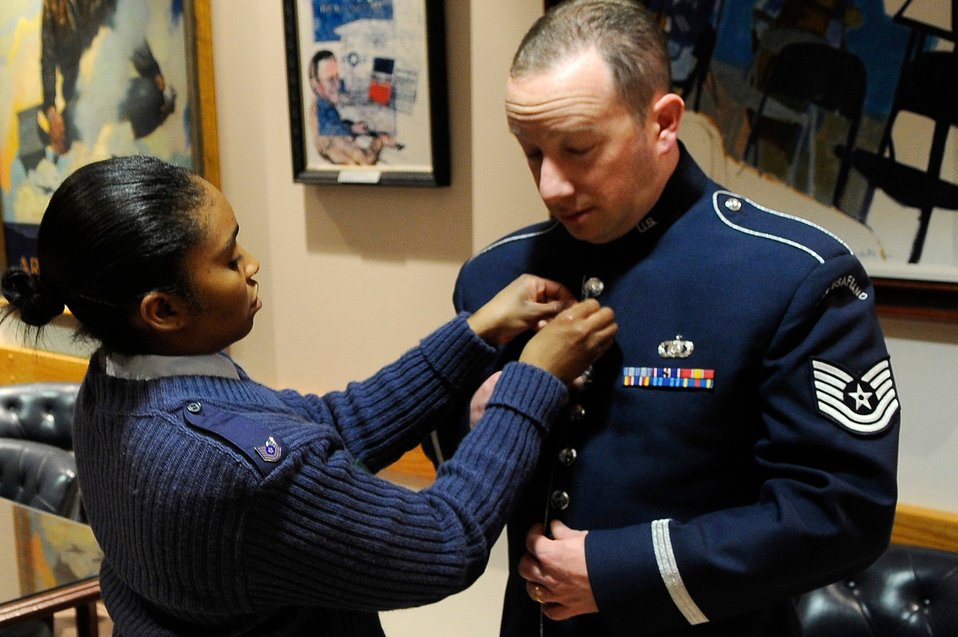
DOD inaugural committee moves into high gear

Tech. Sgt. Luella DeLee, a member of the Armed Forces Inaugural Committee, adjusts Tech. Sgt. Jay Heltzer's uniform Dec. 15 before an interview. Sergeant Heltzer is a member of the U.S. Air Force Band, one of the service units participating in upcoming presidential inauguration events.